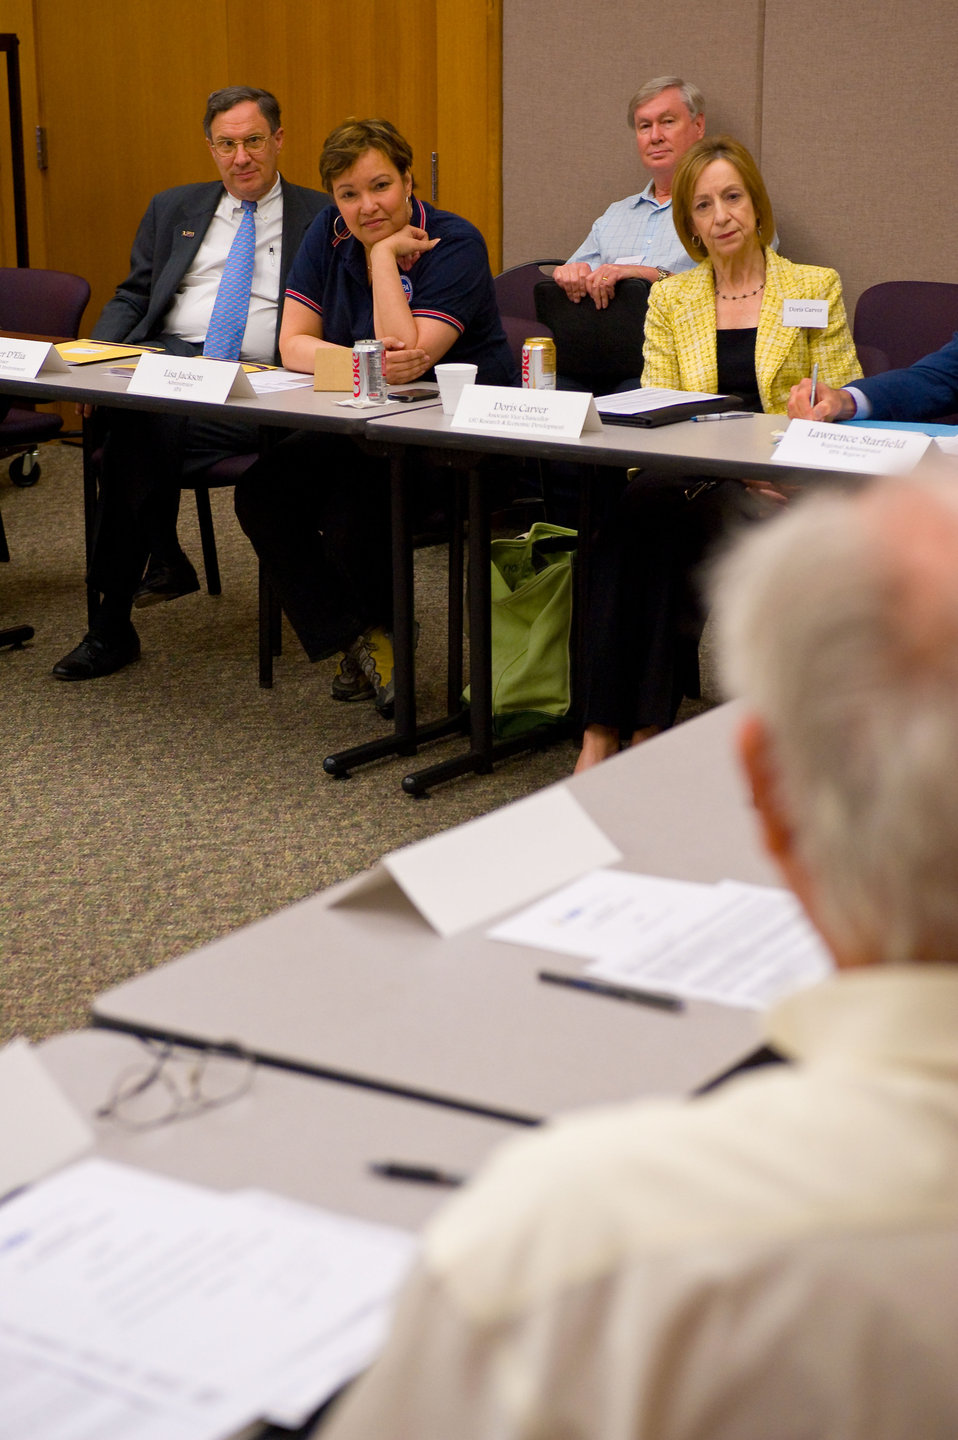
EPA Administrator Meets with Gulf Region Scientists

May 10, 2010 - EPA Administrator Lisa P. Jackson meets with environmental scientists from the Louisiana State University to discuss environmental and human health impact of the ongoing BP oil spill.